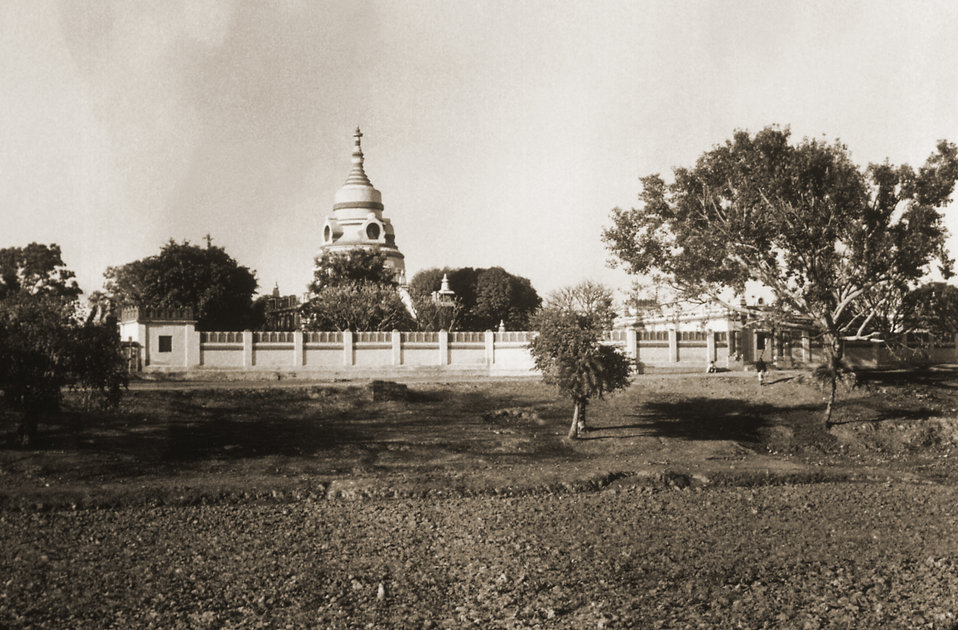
This image depicts a Jain Temple in the Gaya district, in the Indian state of Bihar.